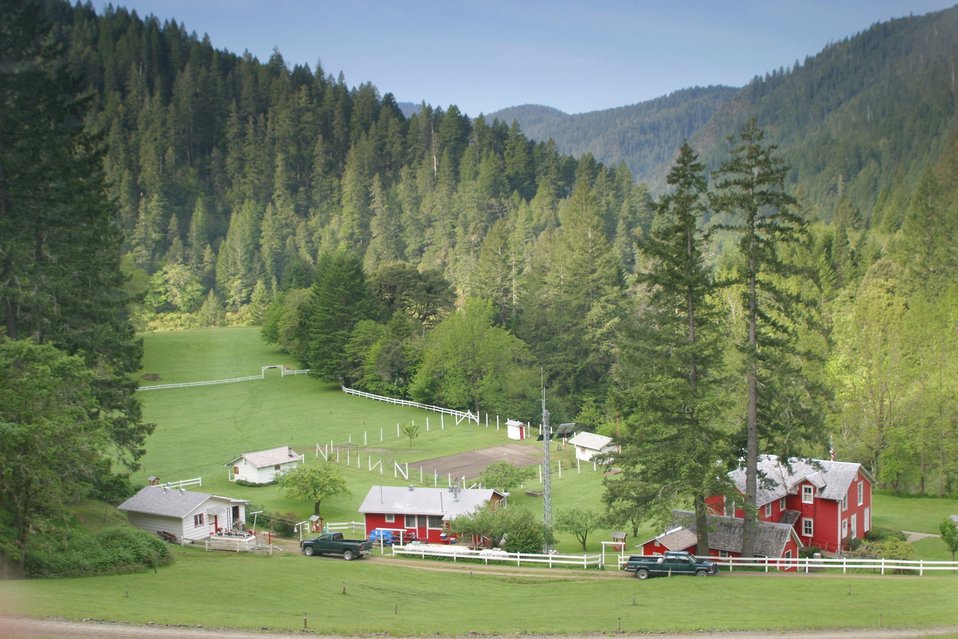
Wild section of the Rogue River from Grave Creek to Foster Bar May 19 to May 22.